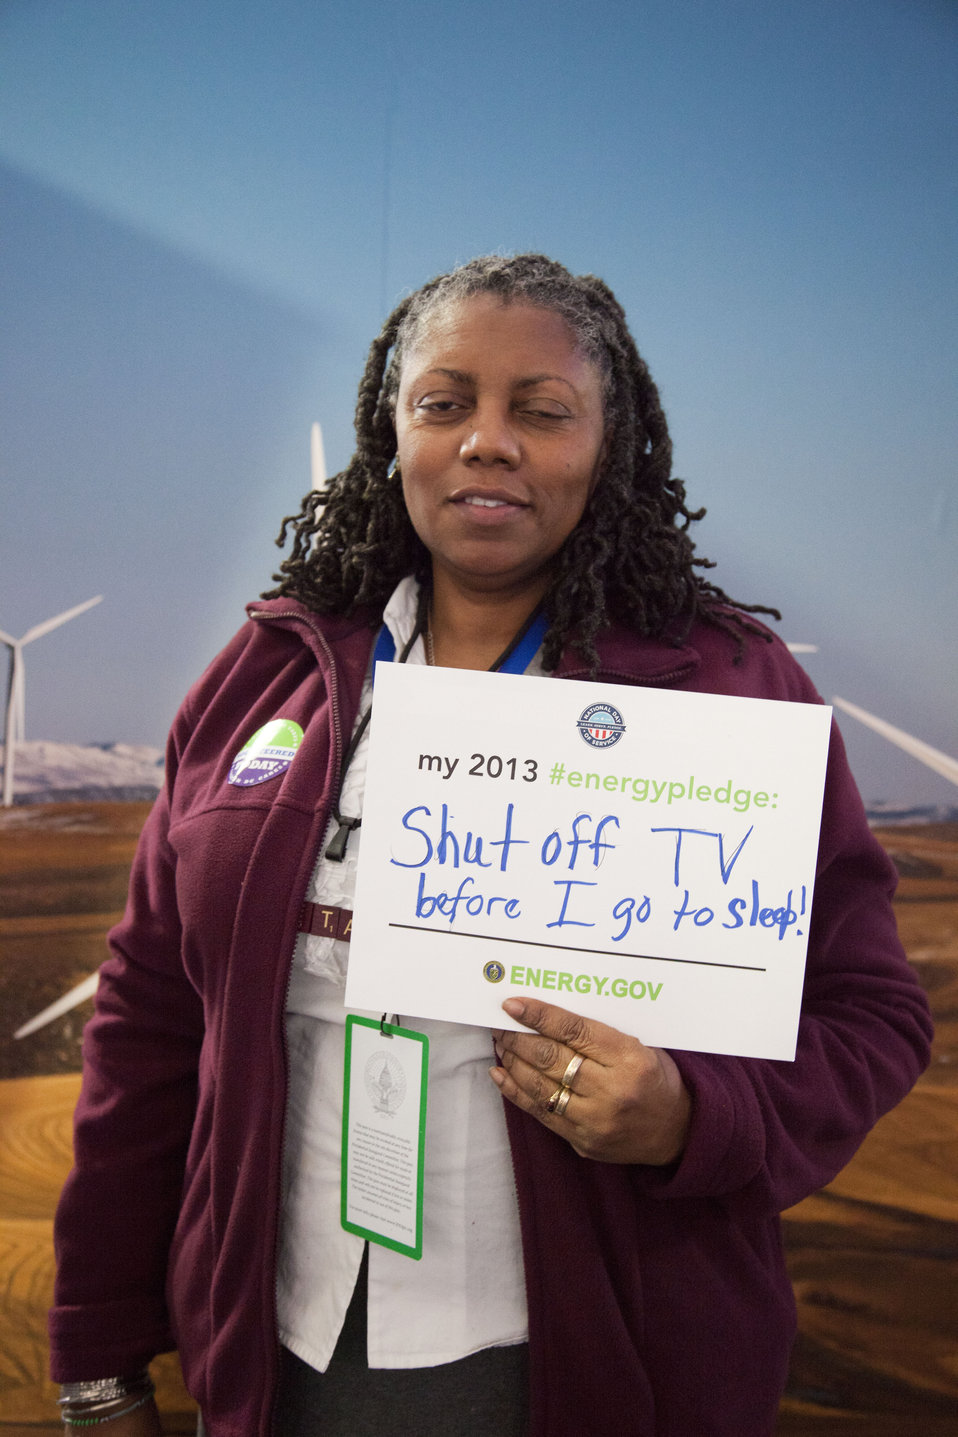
What's your #energypledge?